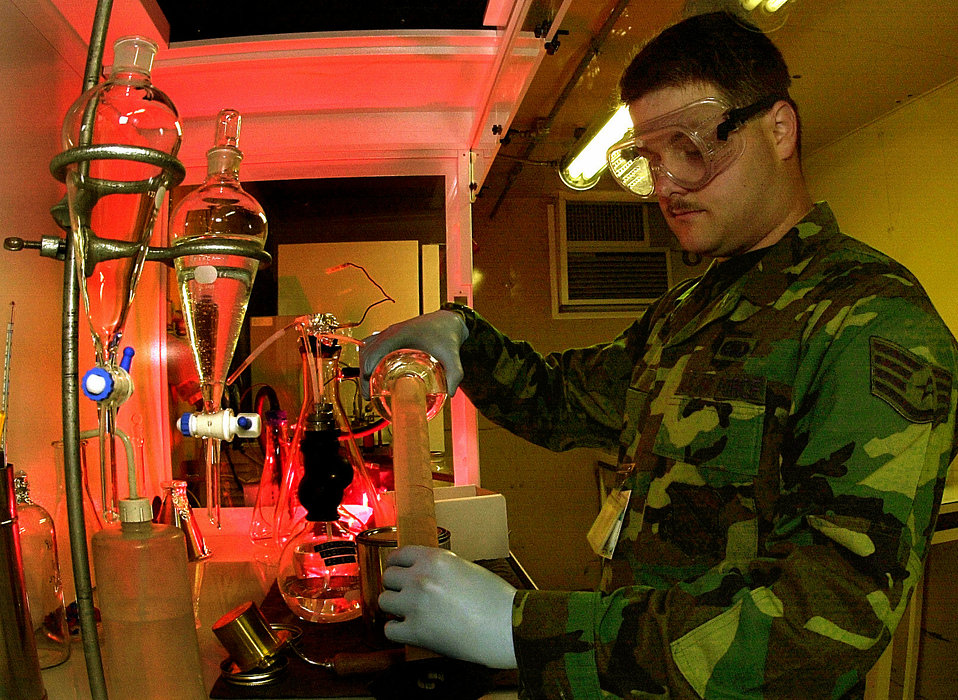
Pure JP8

ISTRES, France -- Staff. Sgt Allen Yost, a fuels lab technician from the 354th Supply Squadron, Eielson Air Force Base, Alaska, tests the chemical balance of JP8 jet fuel the U.S. Air Force buys from the French air force at Istres. The fuel is used in the KC-135 Stratotankers assigned to the 16th Expeditionary Operations Group here, a small U.S. Air Force detachment located on this French air base. Yost tests the fuel every day and can perform 10 different fuels tests in his testing laboratory. The 16th EOG flies in-flight refueling missions for U.S. and NATO planes flying air patrols over the Balkans.